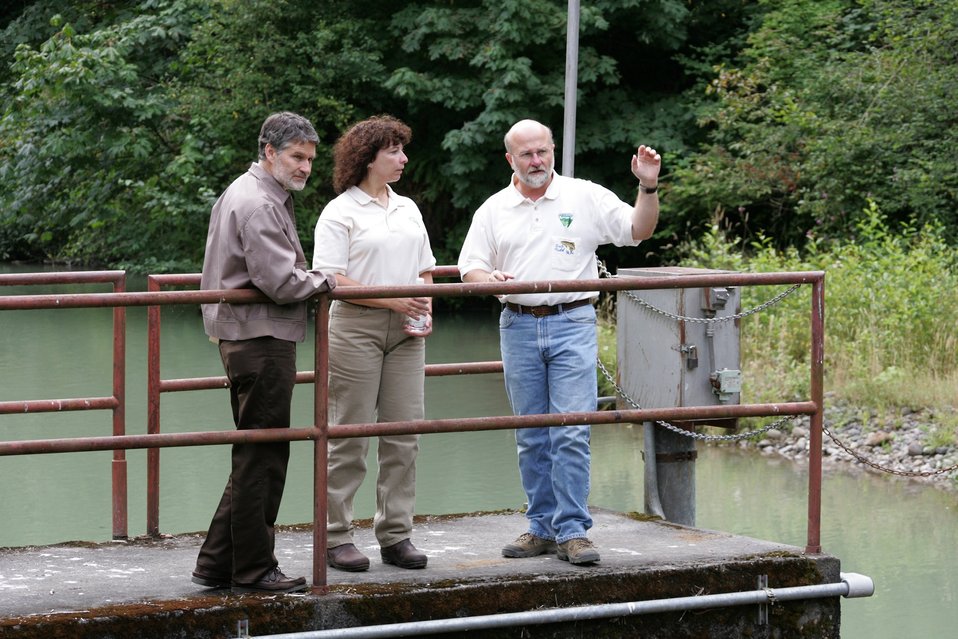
BLM Salem District Manager, Deis Williamson, Cascade Resouce Area Natural Resouce Advisor, Belle Smith and Realty Specialist Dick Todd stand on top of the Little Sandy Dam. The dam is scheduled to be removed in 2007. BLM will acquire the site after the dam is removed.